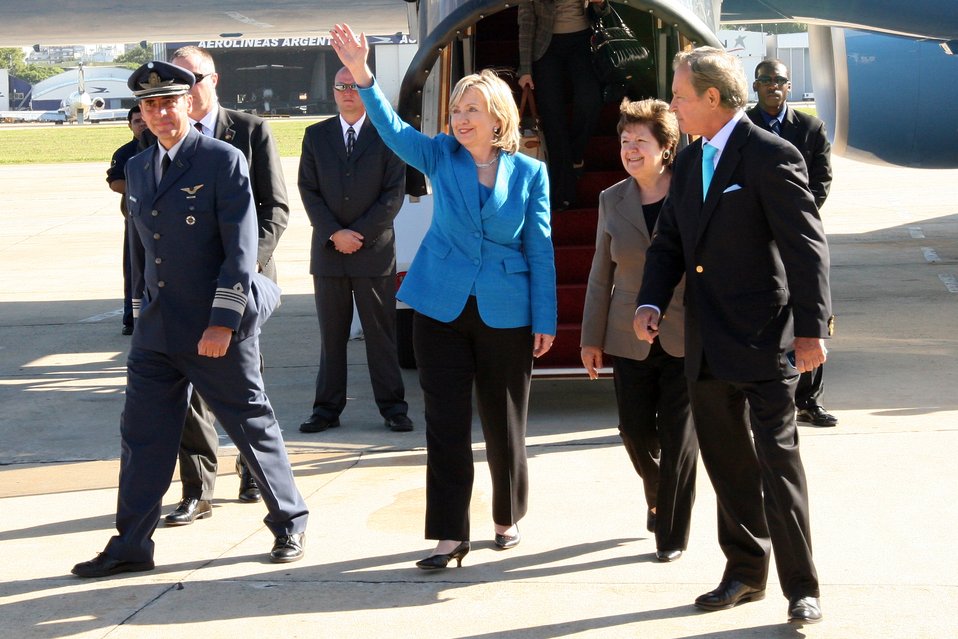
Secretary Clinton Wheels Down in Buenos Aires, Argentina

U.S. Secretary of State Hillary Rodham Clinton 'wheels down' Buenos Aires, Argentina March 1, 2010.